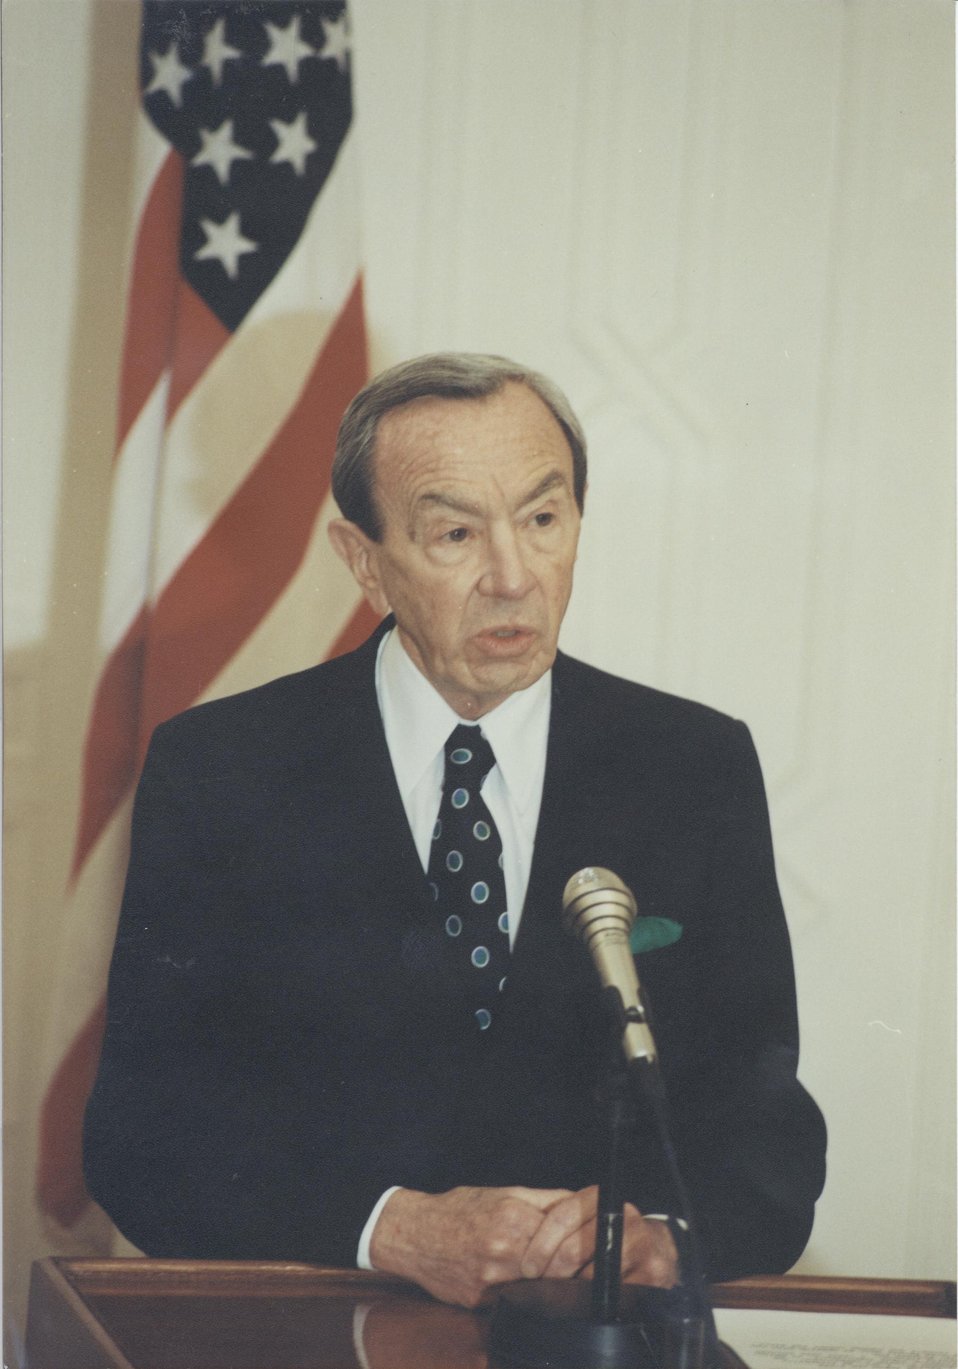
Warren M. Christopher, U.S. Secretary of State, January 20, 1993 to January 17, 1997